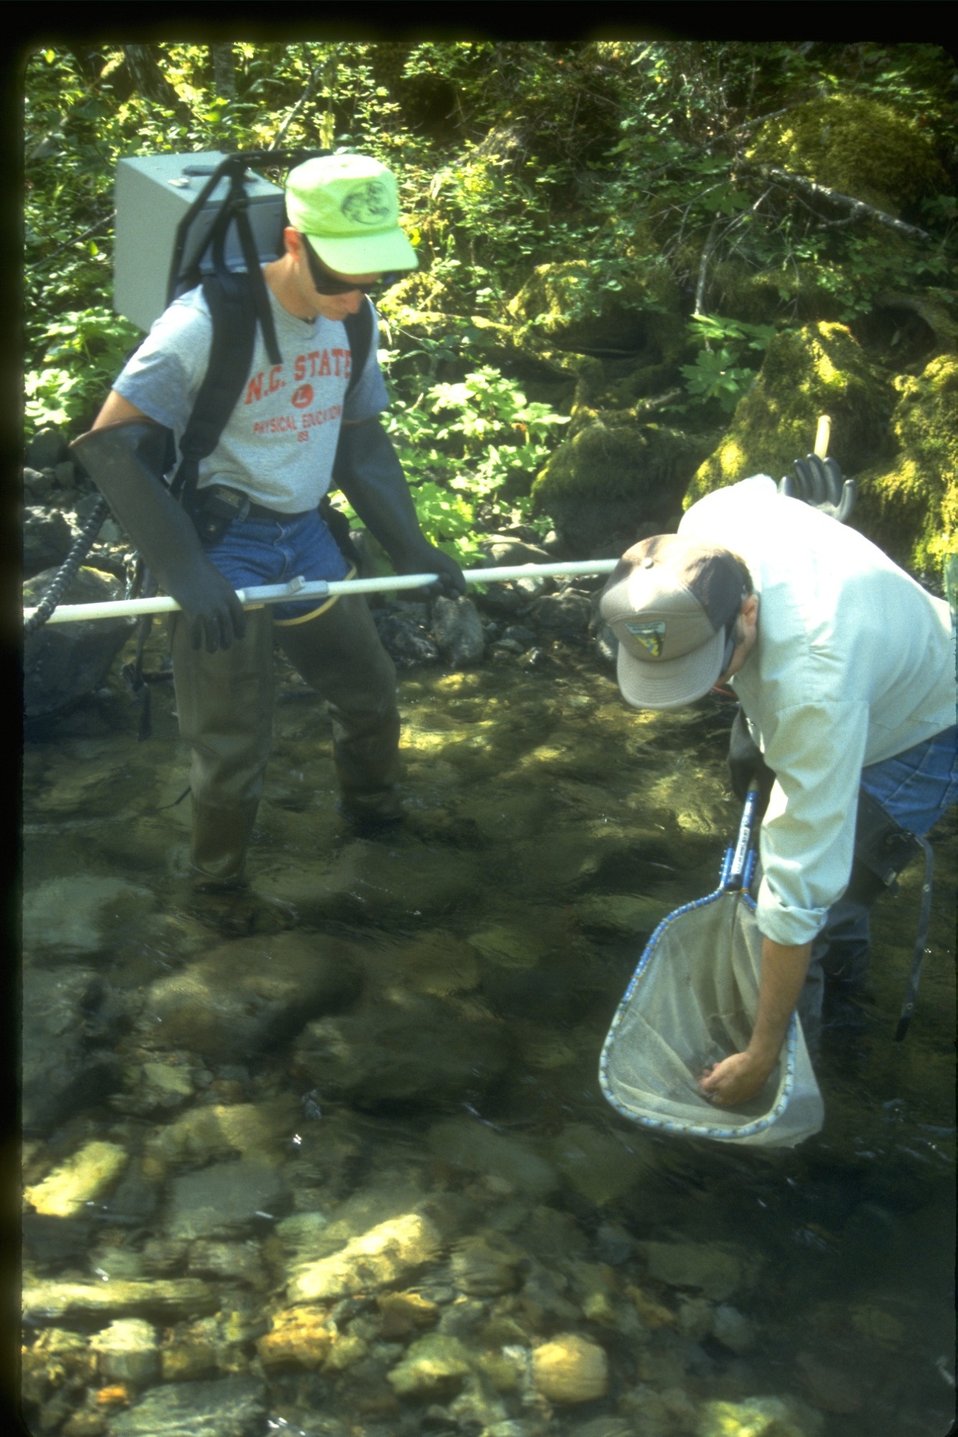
Electro shocking Fish for tagging.